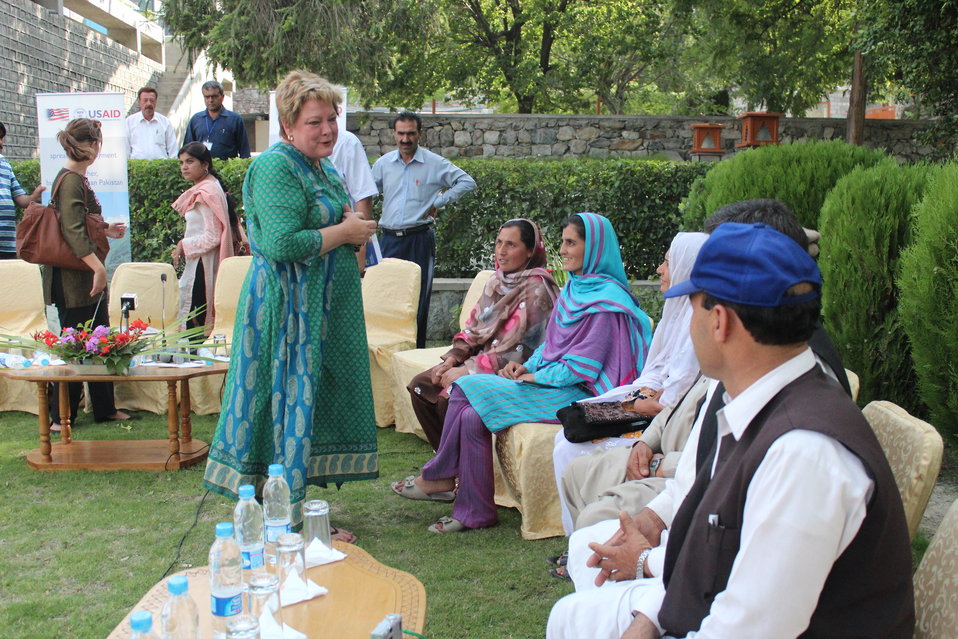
USAID Deputy Country Director Karen Freeman met with 6-8 beneficiaries from Gupis Rural Support Program

On Sunday, USAID Deputy Country Director Karen Freeman met with 6-8 beneficiaries from Gupis Rural Support Program to learn about their project funded by a USAID grant. The meeting took place at Serena Hotel in Gilgit.